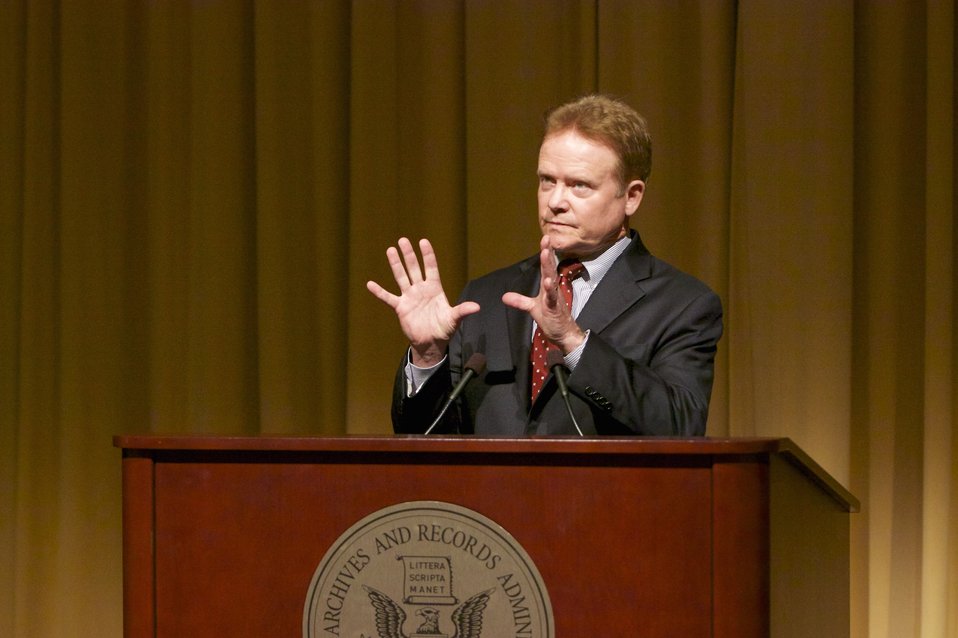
I Heard My Country Calling: A Memoir; James Webb, Former Senator and author, discusses his book